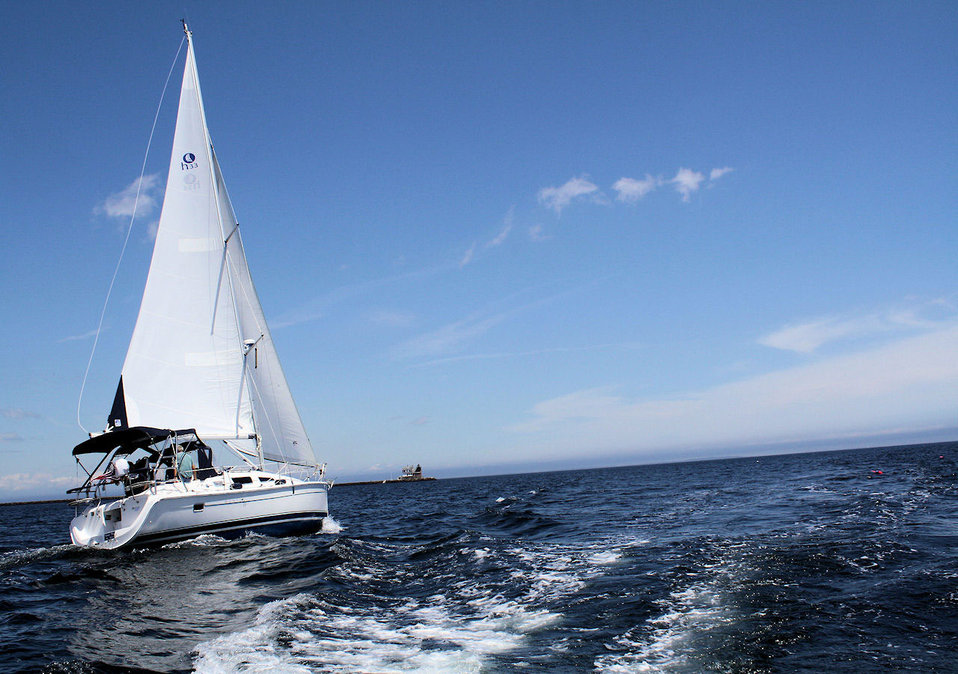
Sailing out in the ocean

Picture taken in maine of a sailboat sailing in the ocean.